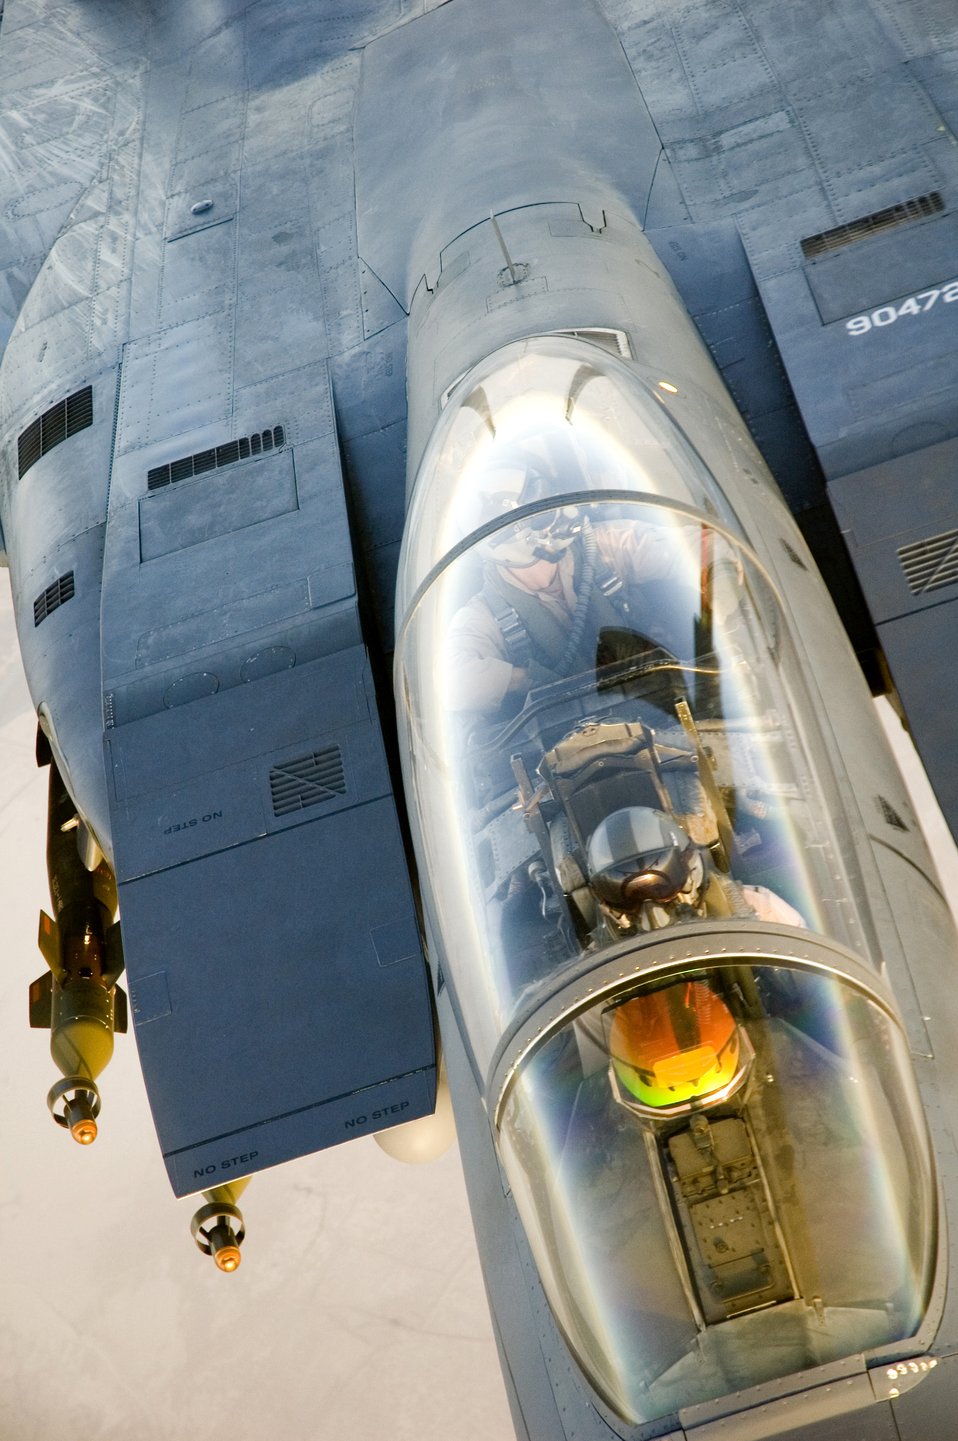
Air refueling squadron takes flight to fuel the fight

The reflection of a KC-135R Stratotanker is seen in the heads-up display of an F-15E Strike Eagle from the 336th Expeditionary Fighter Squadron as it refuels over Iraq on Tuesday, April 18, 2006. Fighters like the F-15E are able to stay in the air longer while providing support to ground forces because of the KC-135's mission.